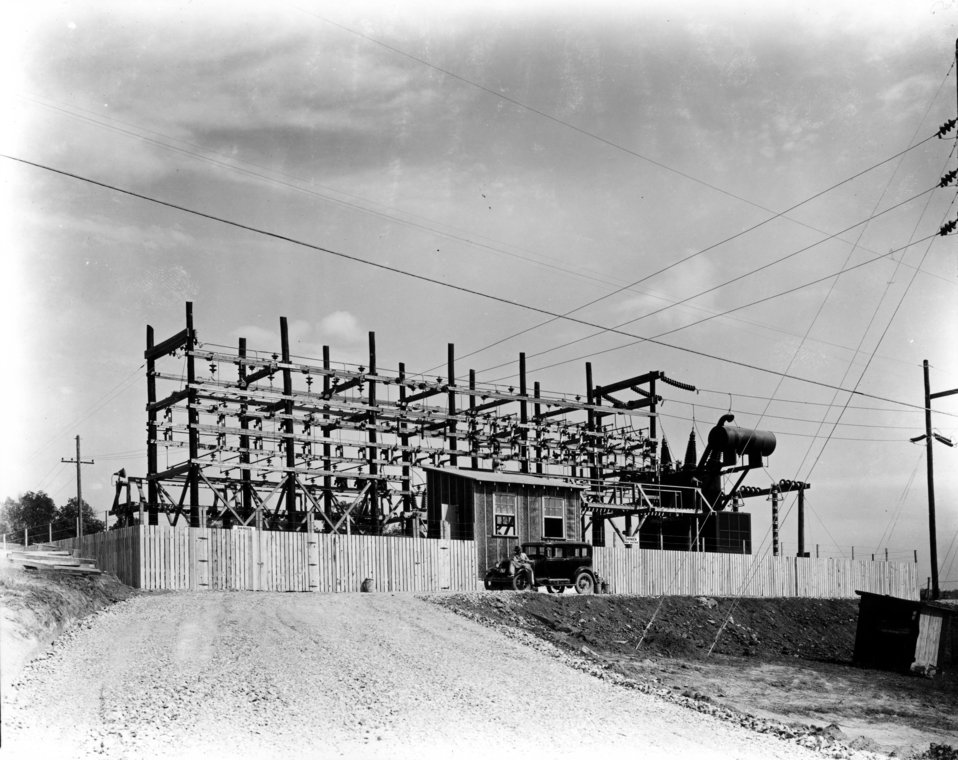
K-25 at Oak Ridge